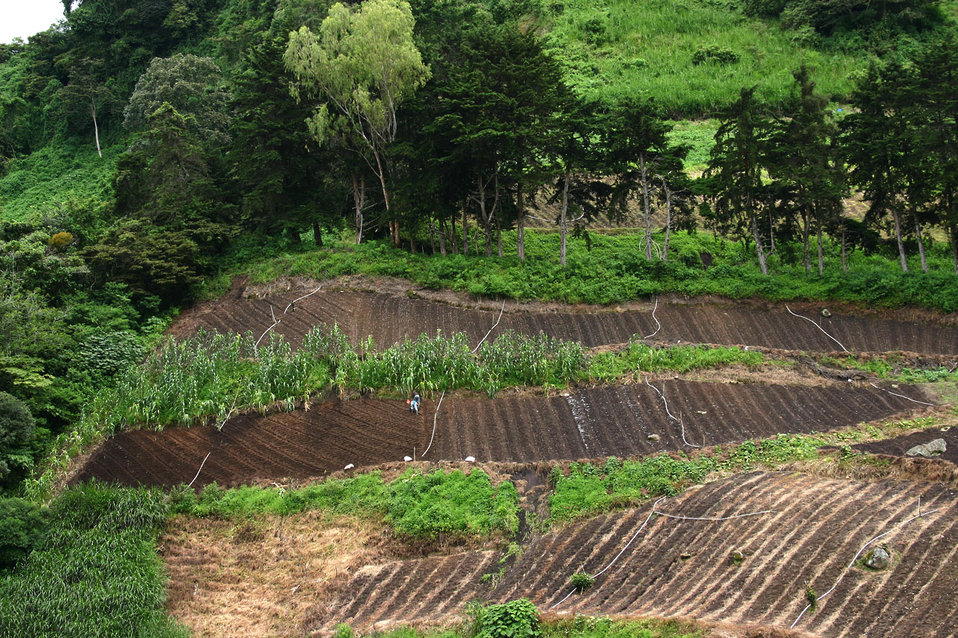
Farming in panama

Working the land in western panama.